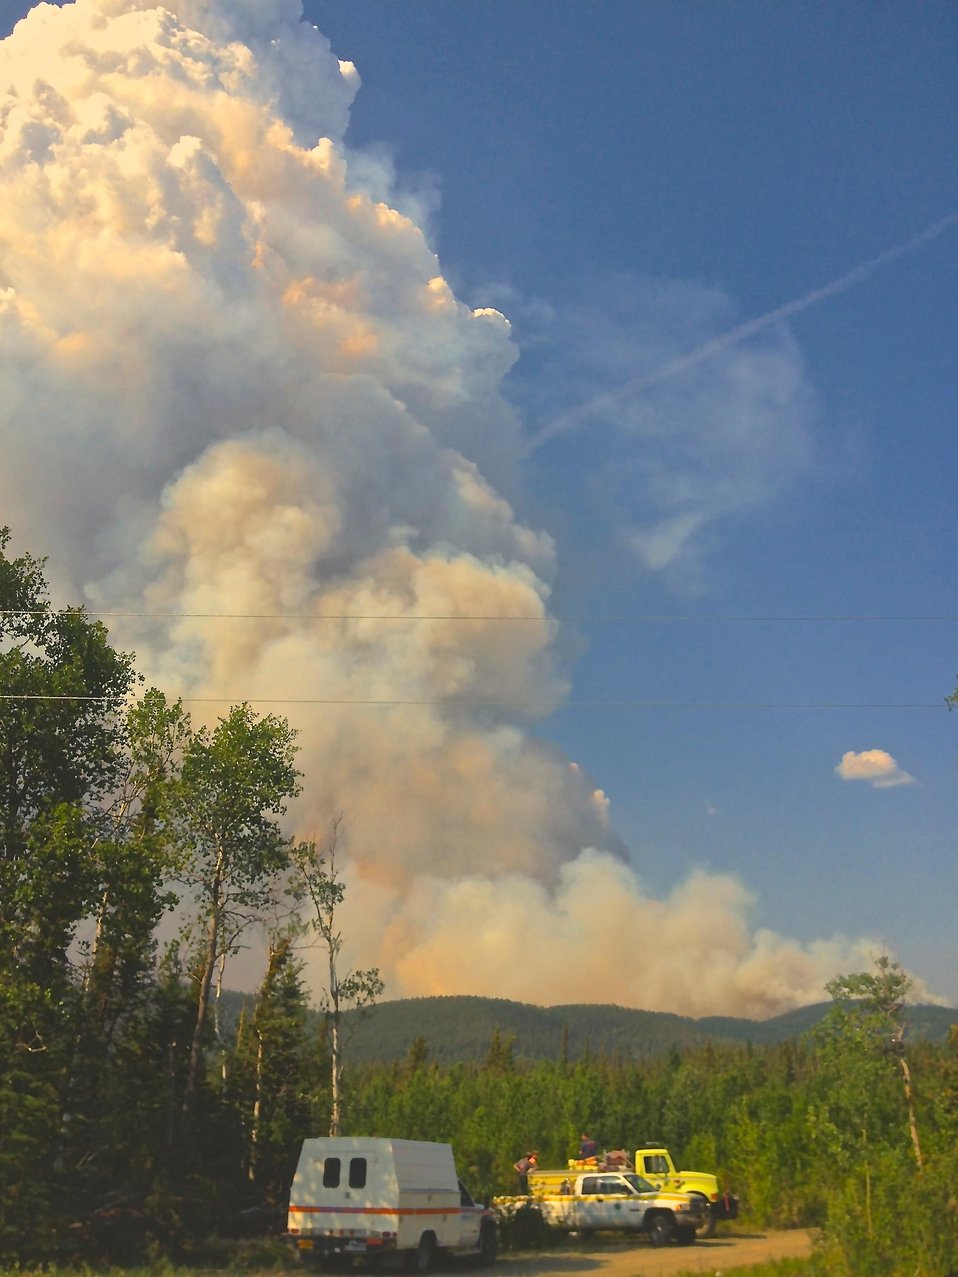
Smoke plume and fire equipment at the site of the Moon Lake Complex Fires in Nevada. The Moon Lake Complex Fires consists of 2 fires, Moon Lake Fire and Tetlin Junction Ridge Fire, along the Alaska and Taylor Highways near Tok, AK. Lightning strikes on Jun. 25, 2013 caused the fires, which have consumed over 49, 959 acres.